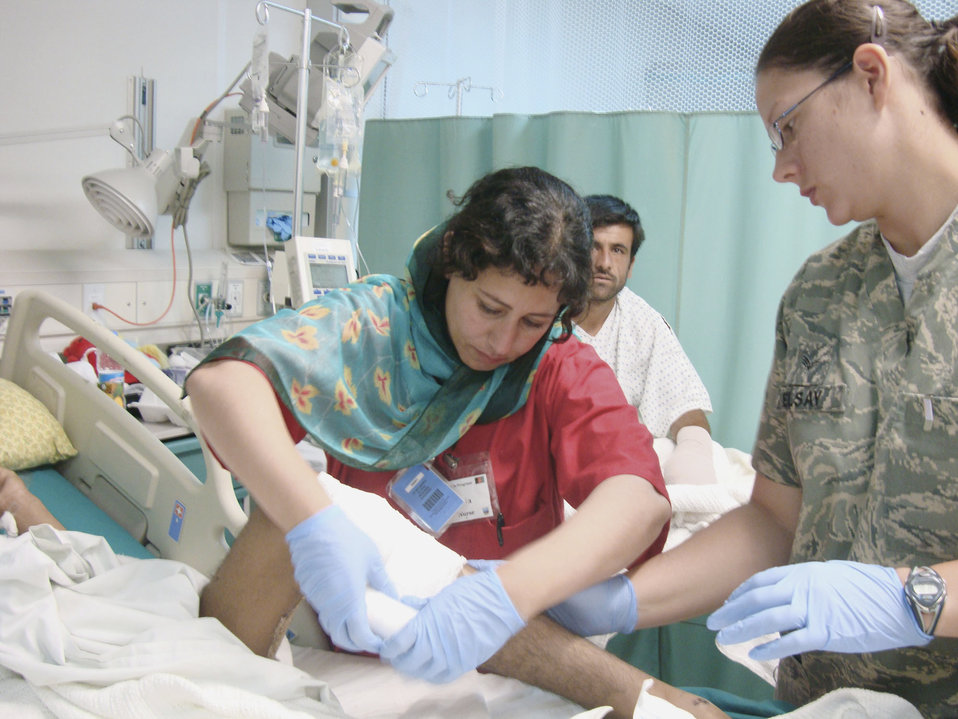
Craig Joint Theater Hospital helps build Afghan nursing foundation

Afghan National Army soldier Laila Farahi (left) bandages a patient's leg Oct. 14, 2009, at Bagram Airfield, Afghanistan. She attended a special two-week mentorship program at the Criag Joint Theater Hospital here to work alongside U.S. doctors and nurses to hone her medical skills and get firsthand experience with trauma-based care. She was one of the first women to ever attend the special program.